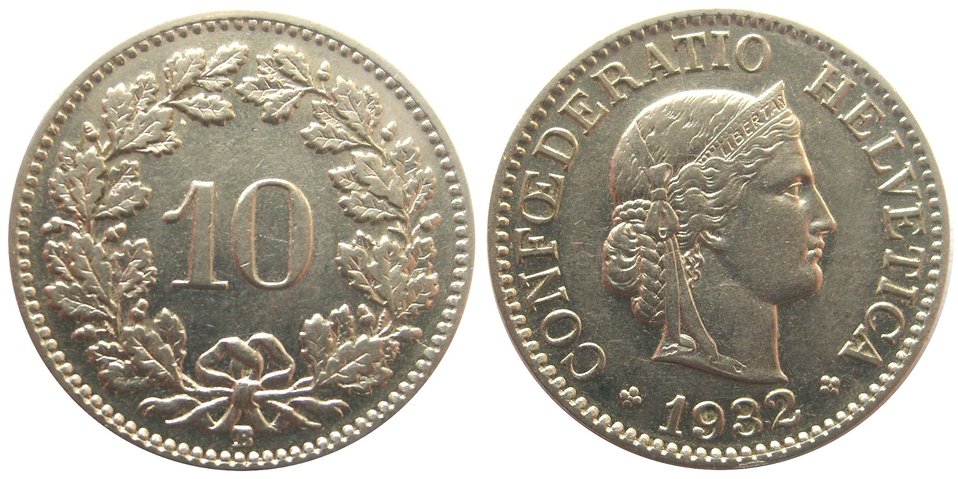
Français : 10 centimes 1932 suisse nickel pur